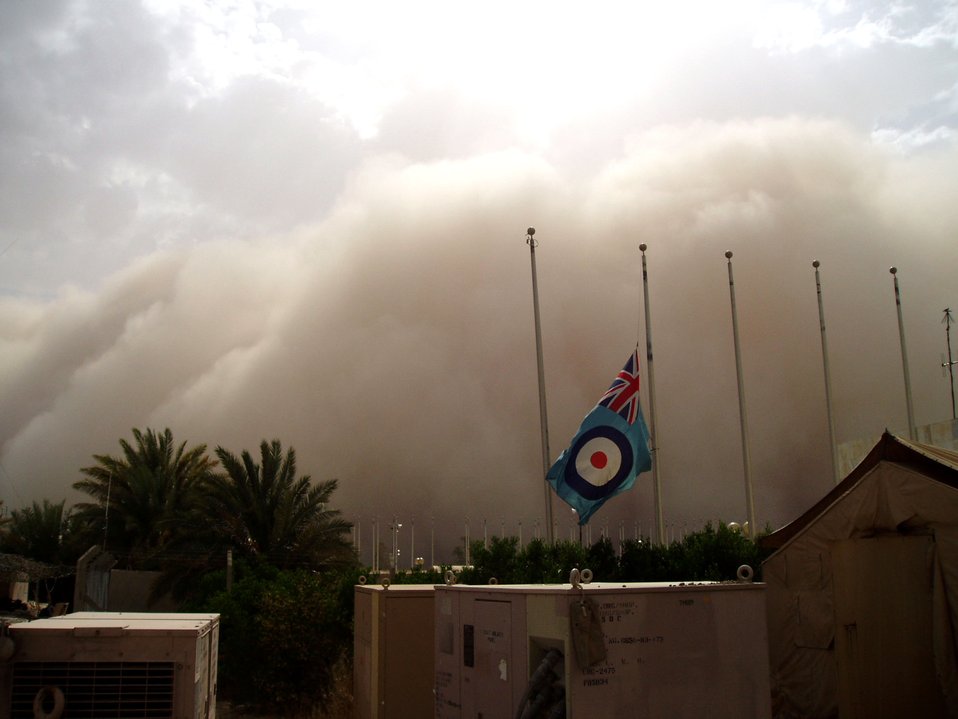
Sand storm

A sand storm approaches Sather Air Base, Iraq, on Monday, May 8, 2006. The storm engulfed the Baghdad area and caused near-zero visibility.